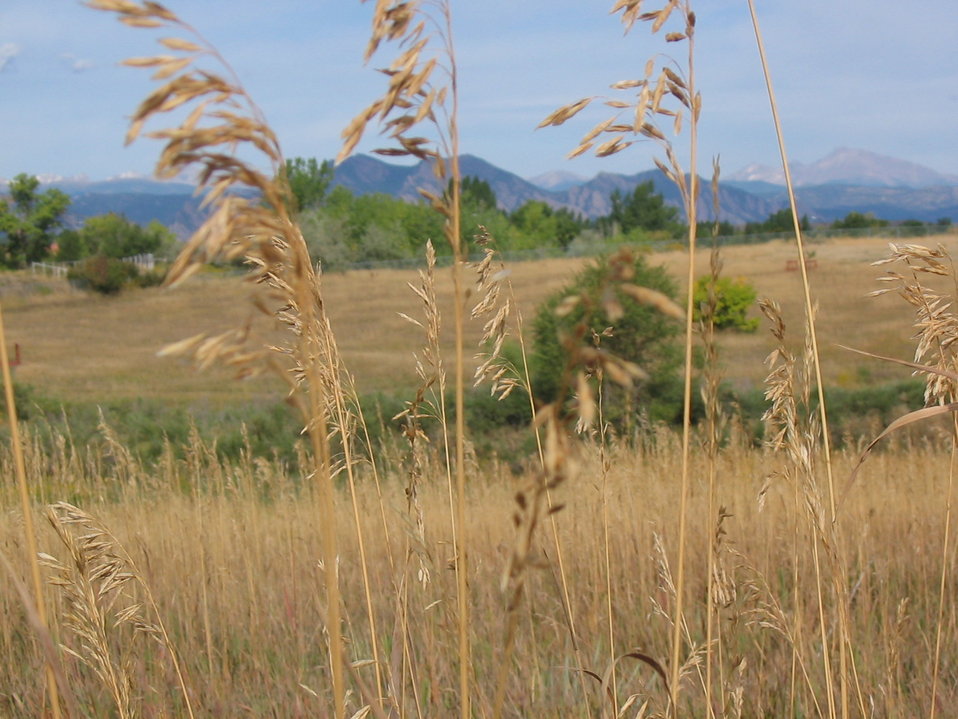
Prairie View